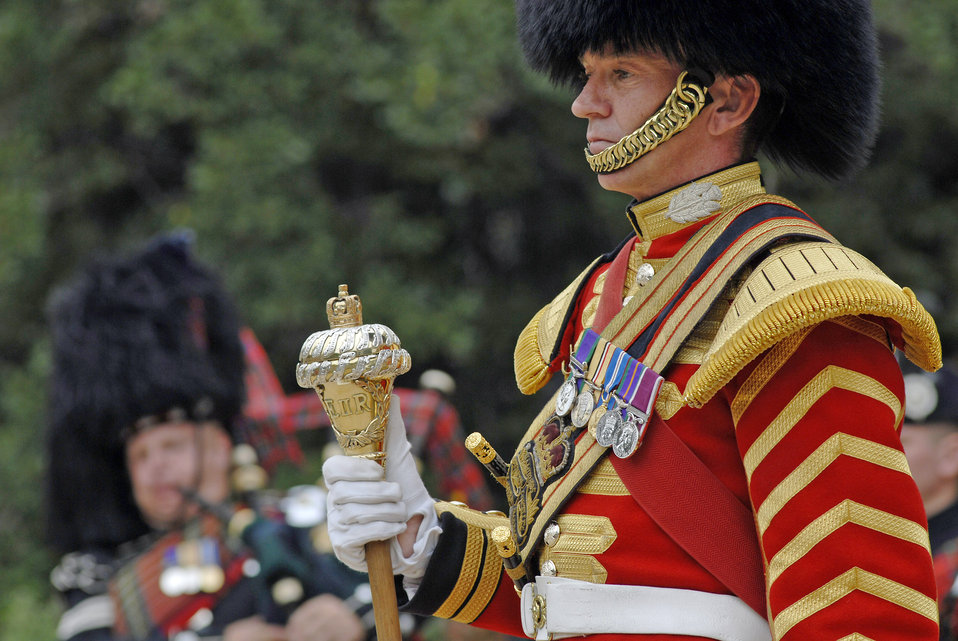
British band performs in Pentagon courtyard

British Army Sgt. Martin Godsman leads the British Army Pipes and Drums of the 1st Battalion Scots Guard during a performance for employees, servicemembers and families Sept. 25, 2009, at the Pentagon. The band of British Army infantry soldiers performed to their closet allies prior to a Helmand Province joint deployment next spring.